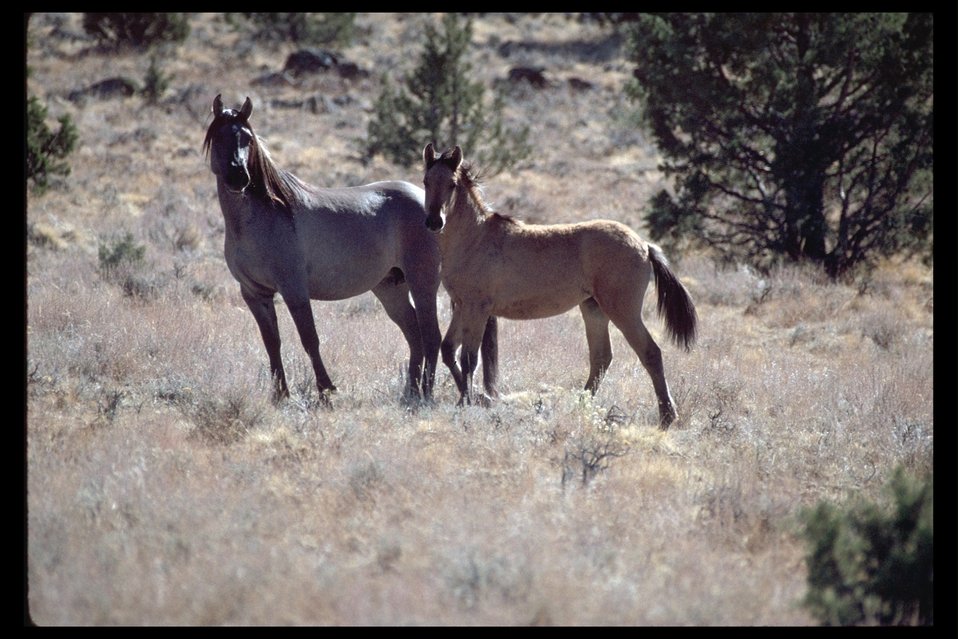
Kiger mustang on Kiger HMA.